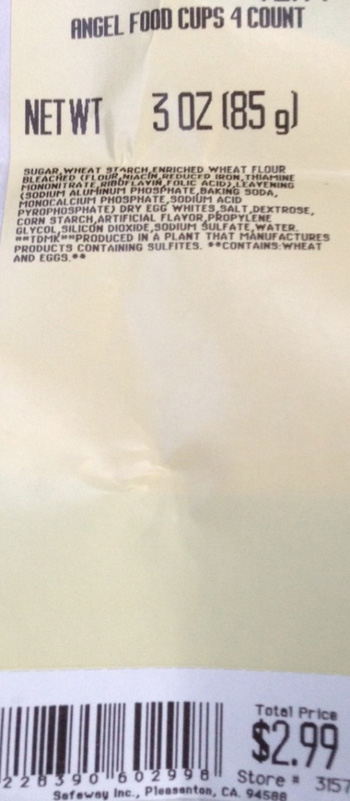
RECALLED – Angel Food Cakes

September 26, 2013 – Product Recall – Safeway Recalls Several Varieties of Angel Food Cake Due to Undeclared Soy and Milk Allergens.